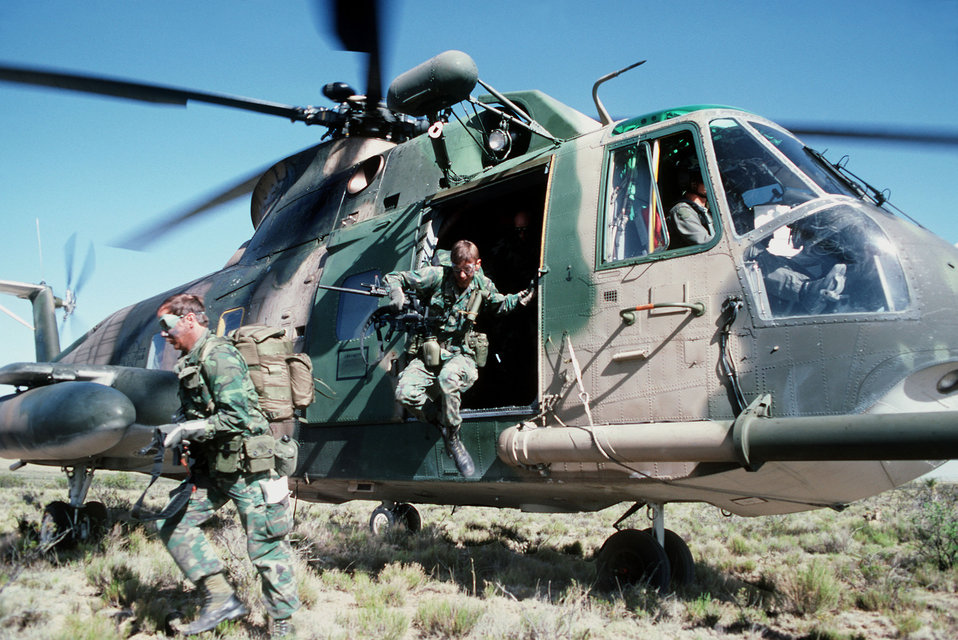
Exercise Patriot Coyote

1990's -- Members of a pararescue team leave an HH-3E Jolly Green Giant helicopter to begin a search and rescue mission during Exercise Patriot Coyote.